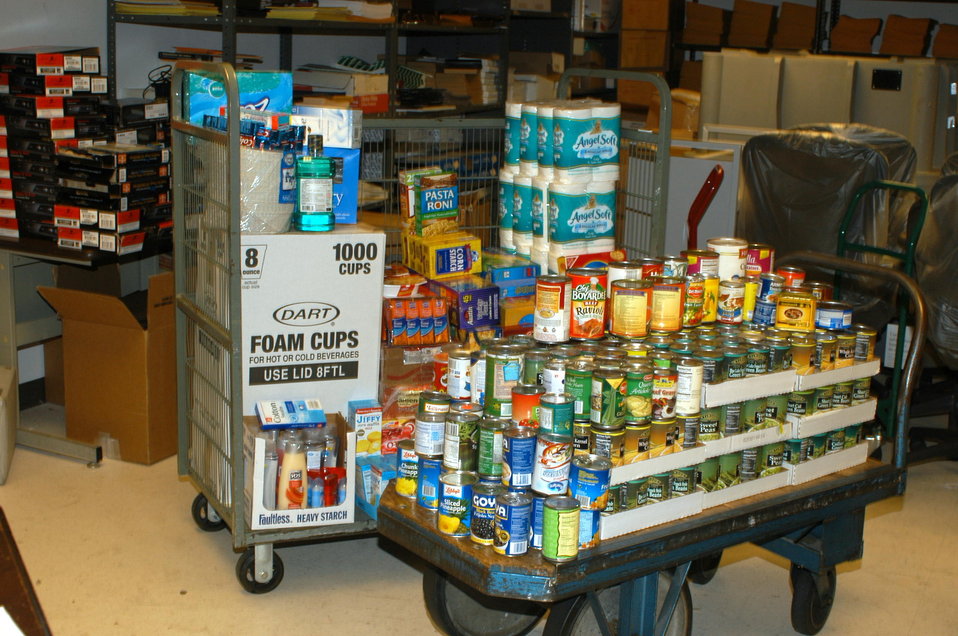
Sierra Exif JPEG